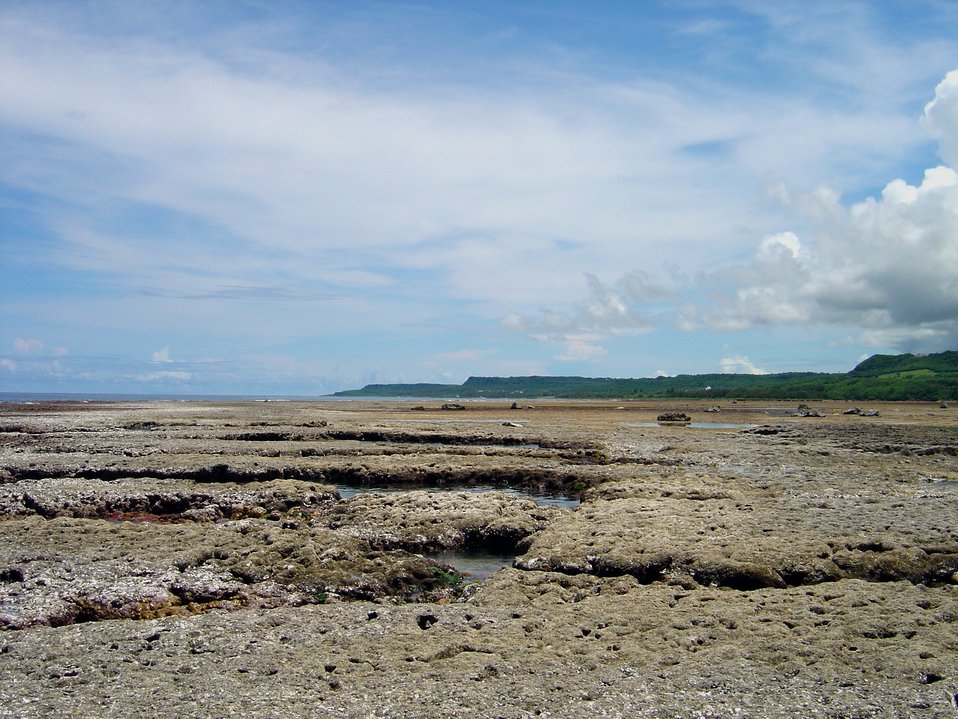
Brown algae in channels while reef flat appears devoid of growth at low tide on Guam coastline.